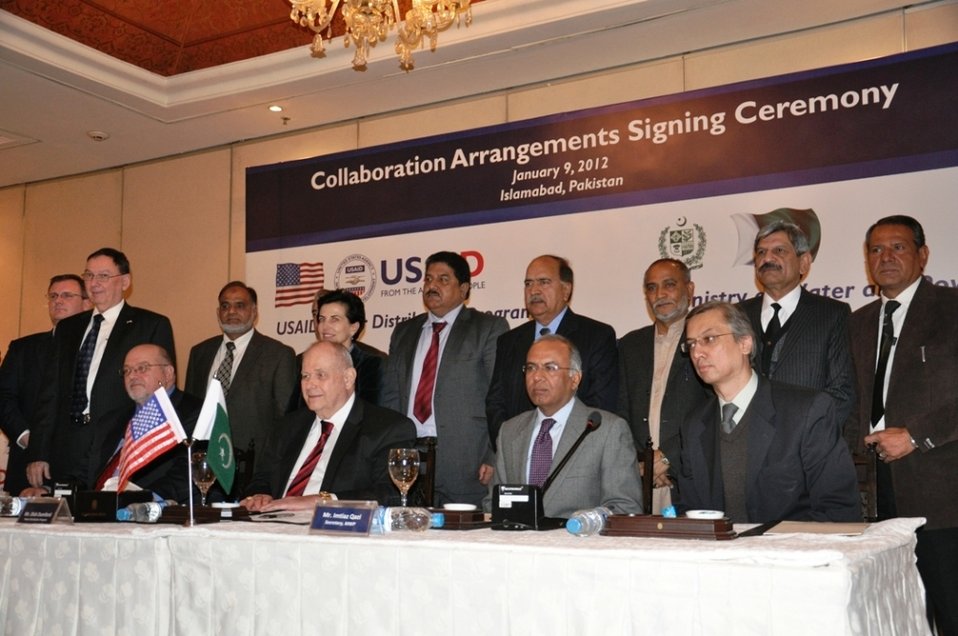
Collaboration Arrangement Signing Ceremony

Islamabad, January 9, 2012 - Mr. John Morgan, Program Office, USAID, Mr. lmtiaz Qazi, Secretary MWP, Chief of Party, USAID Power Distribution Program, Joint Secretary Power, Ministry of Water and Power and CEOs of DISCOs having a group photograph after successful conclusion of the signing ceremony.